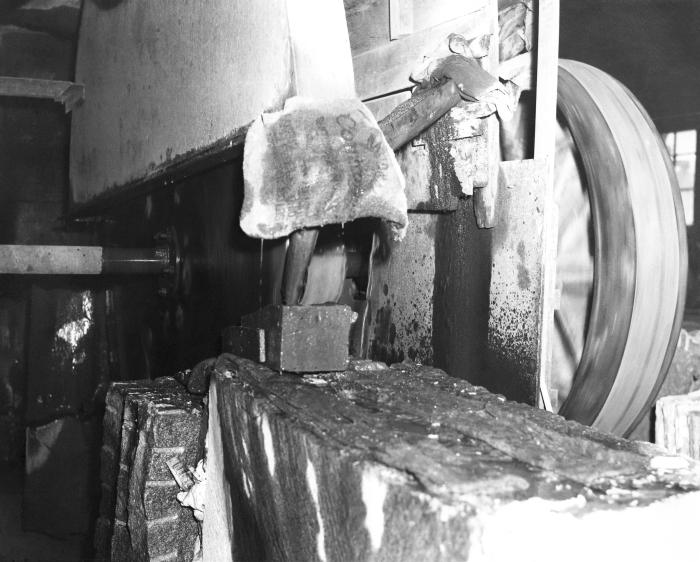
This historic 1947 image was provided by the Center for Disease Control's (CDC), National Institute for Occupational Safety and Health (NIOSH). It was taken within the interior of an Indiana manufacturing plant, and showed a flywheel in motion during one of the plants manufacturing processes.